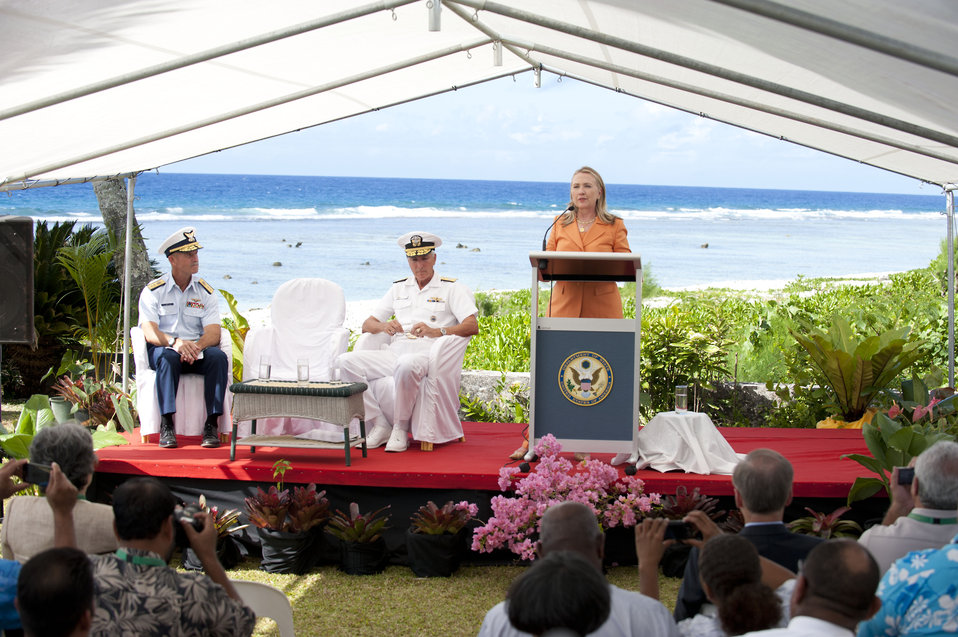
Secretary Clinton Delivers Remarks on Peace and Security Partnerships in the Pacific

U.S. Secretary of State Hillary Rodham Clinton delivers remarks commemorating U.S. peace and security partnerships in the Pacific at Tamarind House in Rarotonga, Cook Islands, August 31, 2012.